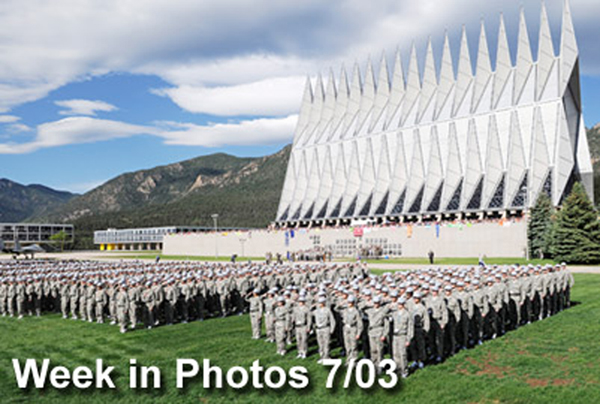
Week in Photos 7/3

Air Force Week in Photos for July 3 highlights photos from around the Air Force. In this photo by Mike Kaplan, more than 1,300 basic cadets salute during their first reveille formation June 26 at the U.S. Air Force Academy in Colorado Springs, Colo.